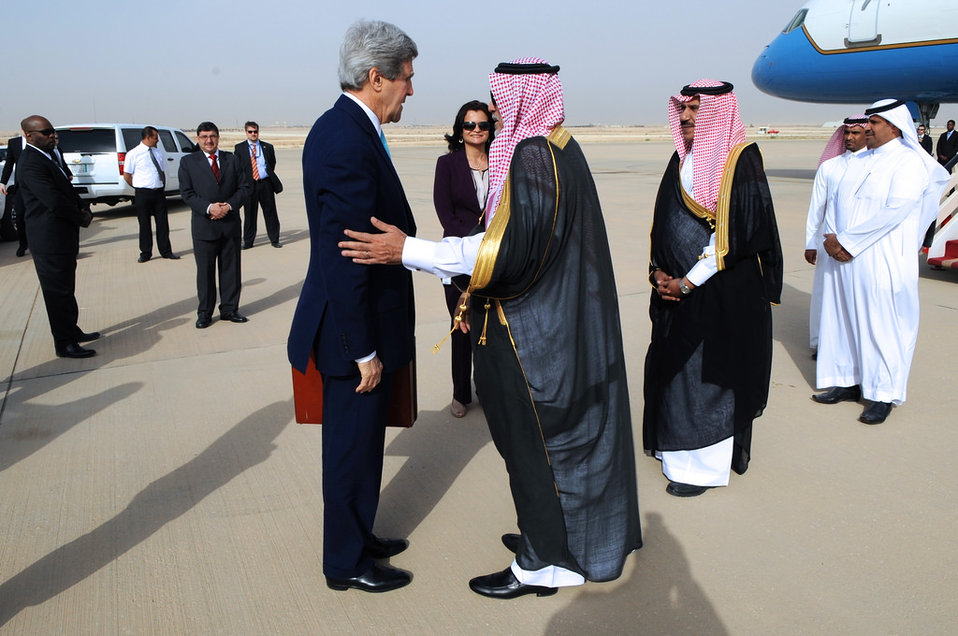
Saudi Protocol Officer Bids Farewell to Secretary Kerry As He Departs for Europe

A Protocol Officer from the Kingdom of Saudi Arabia bids farewell to U.S. Secretary of State John Kerry as he departs from Riyadh on March 29, 2014, for upcoming meetings in Europe.